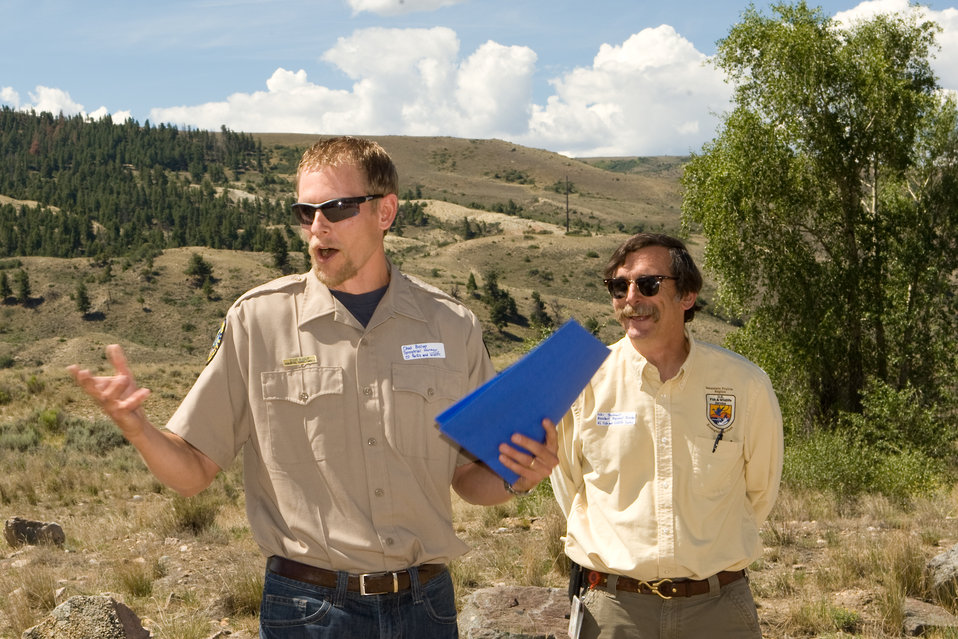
Colorado Rare Plant Conservation Initiative

The Colorado Rare Plant Conservation Initiative (RPCI) is a partnership of 23 statewide and regional agencies, private organizations, and academic institutions working to conserve 121 rare plants in Colorado. As part of these efforts the group developed the Colorado Rare Plant Conservation Strategy, developed Best Management Practices to reduce energy development impacts, addressed climate change, and developed focused strategies for the conservation of individual species at eight priority landscapes. The group has also worked to coordinate volunteer efforts for plant conservation across the state.